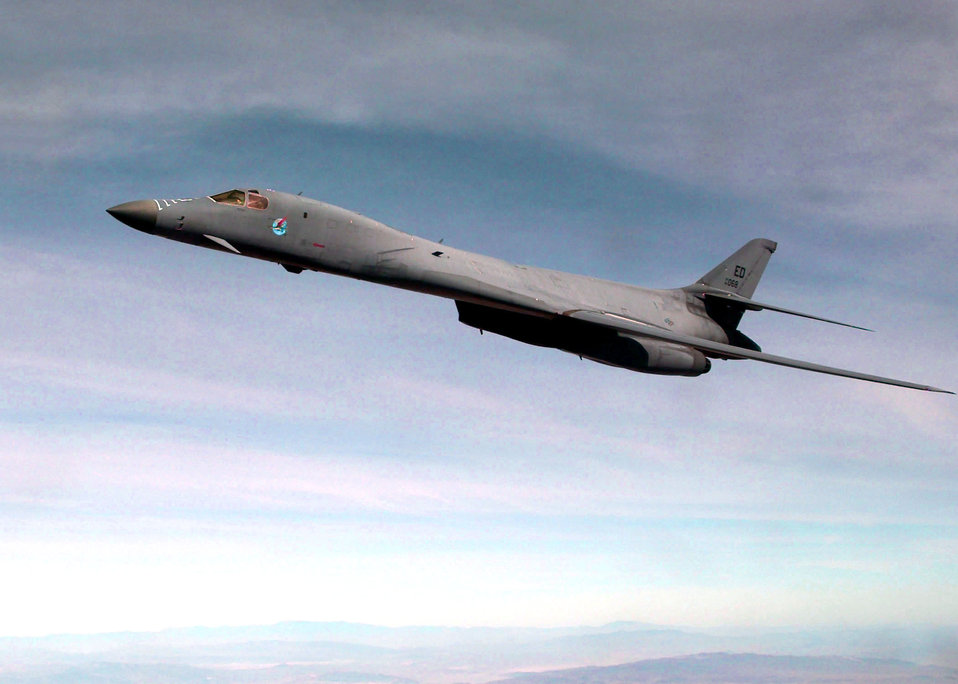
Setting records

OVER EDWARDS AIR FORCE BASE, Calif. -- The B-1B Lancer soars above the 2003 Edwards Open House and Air Show here. During the performance, the B-1B set 45 new world records for speed and broke five previously set records. These records became official April 30.